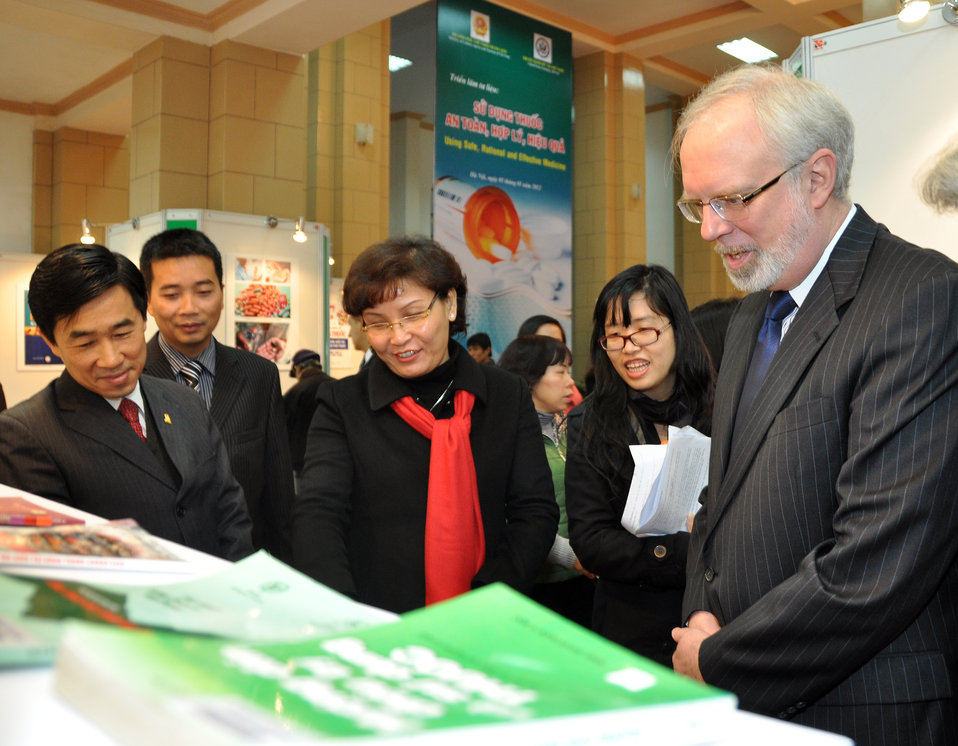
U.S. Ambassador David Shear opens safe medicine exhibition in Hanoi

Safe Medicine Exhibition